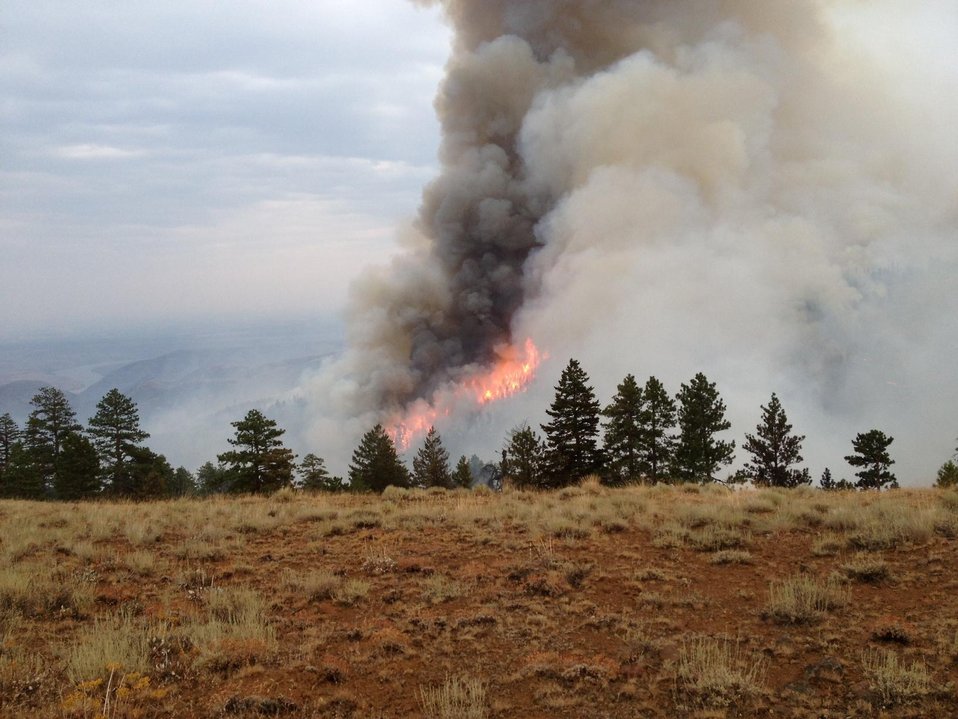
The Colockum Tarps Fire southwest of Malaga, WA began on Jul. 27, 2013 is under investigation. The fire has consumed approximately 70,000 acres and is approximately 25% contained.